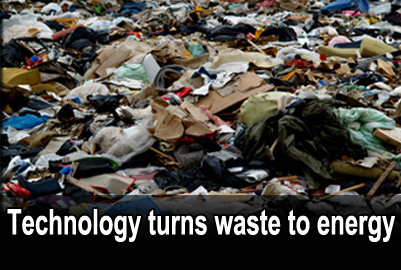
Plasma Arc

Officials at Robins Air Force Base, Ga. are researching the use of plasma arc technology to turn solid waste to energy in an environmentally friendly manner.